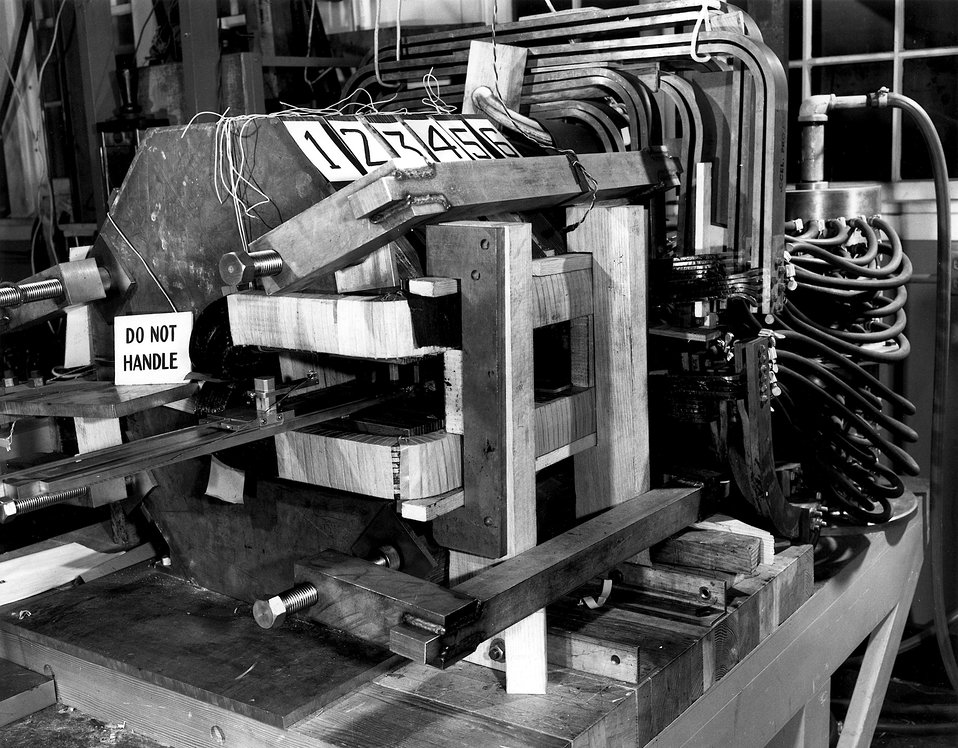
Quarter scale model - Mark III of Cosmotron magnet
set-up for strain gauge measurements.